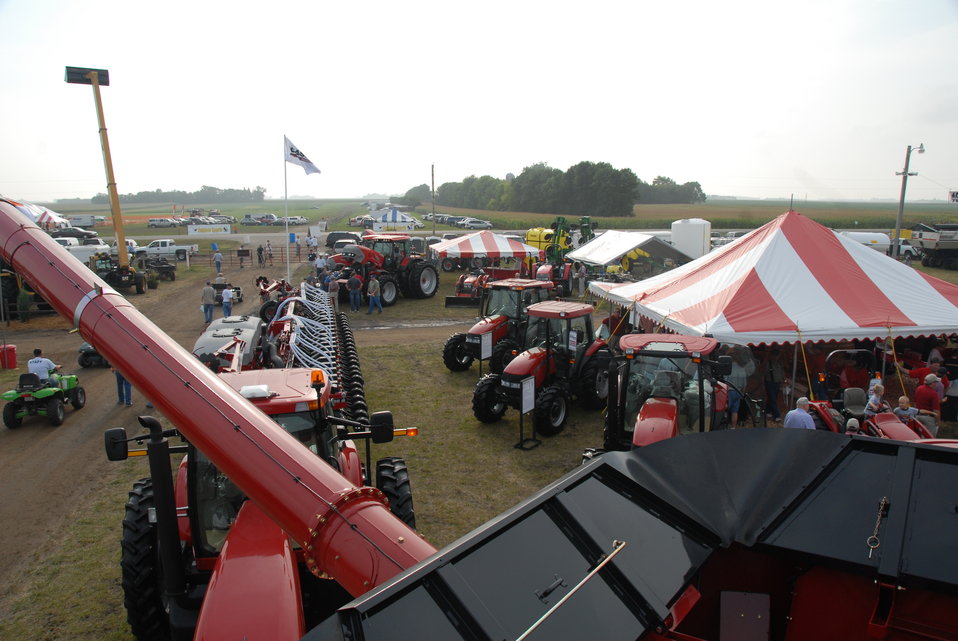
Tractors, loaders, tillage equipment and other types of agricultural farm machinery are displayed at the Minnesota Farmfest in Redwood County, Minnesota on August 7, 2007. Farmfest is one of the largest agricultural events in the world and it brings the best products and services to an audience that is drawn from every Minnesota County and has many visitors from five neighboring states.